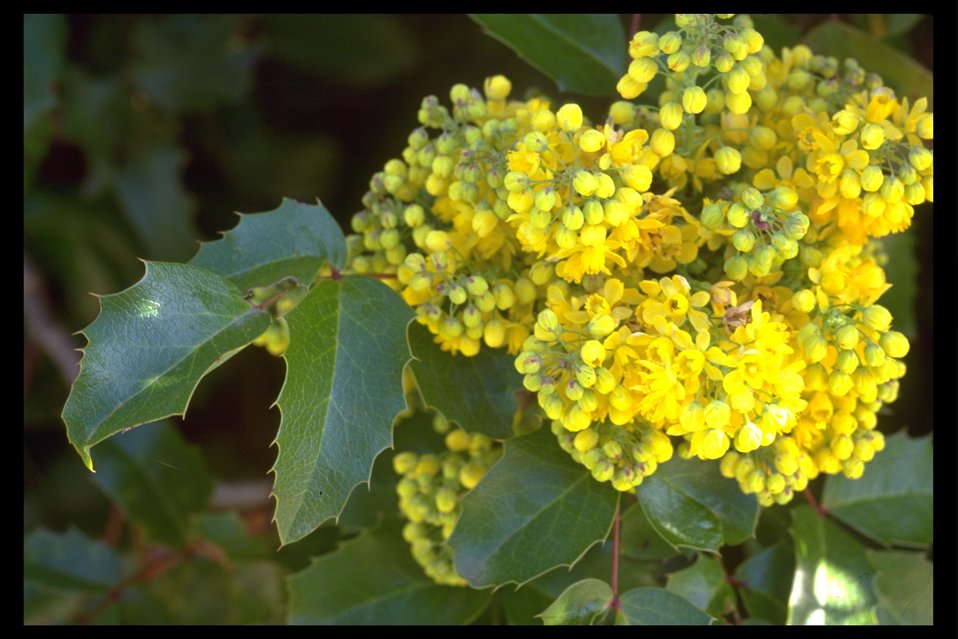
Tall Oregon Grape (Berbis aquifolium) at Shady Cove near the Rogue River.